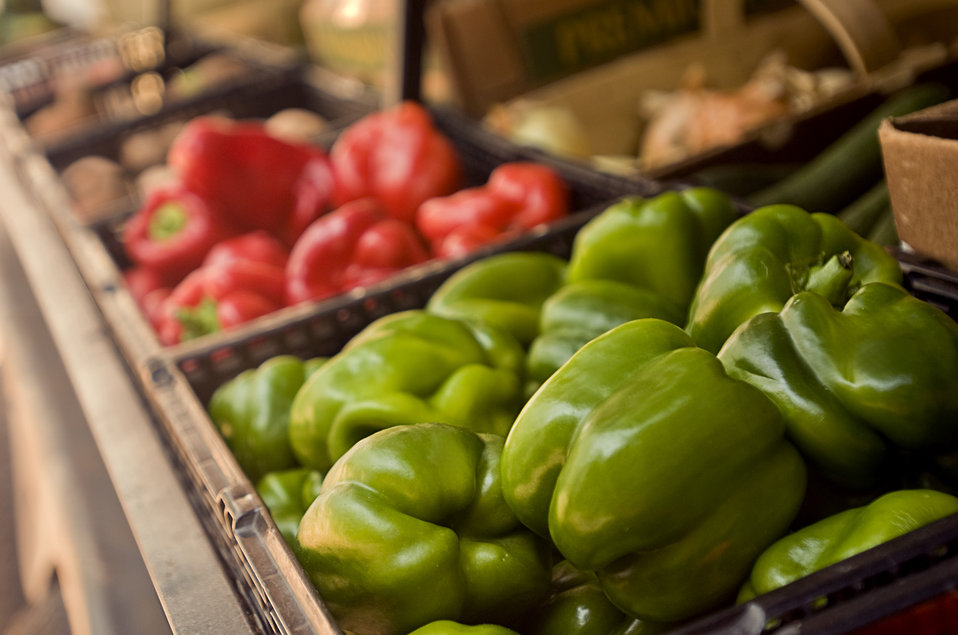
This image was captured in the produce section of a mobile Georgian farmers market, and depicts a close-up view of a basket of green bell peppers, behind which was a basket of their cousins, red bell peppers.Varieties